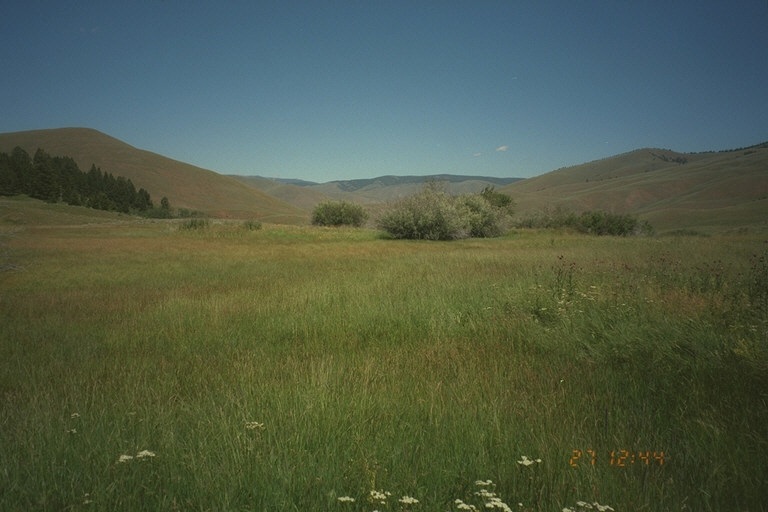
Riparian area Public Lands Salmon Field Office UCSC Upper Columbia Salmon Clearwater District